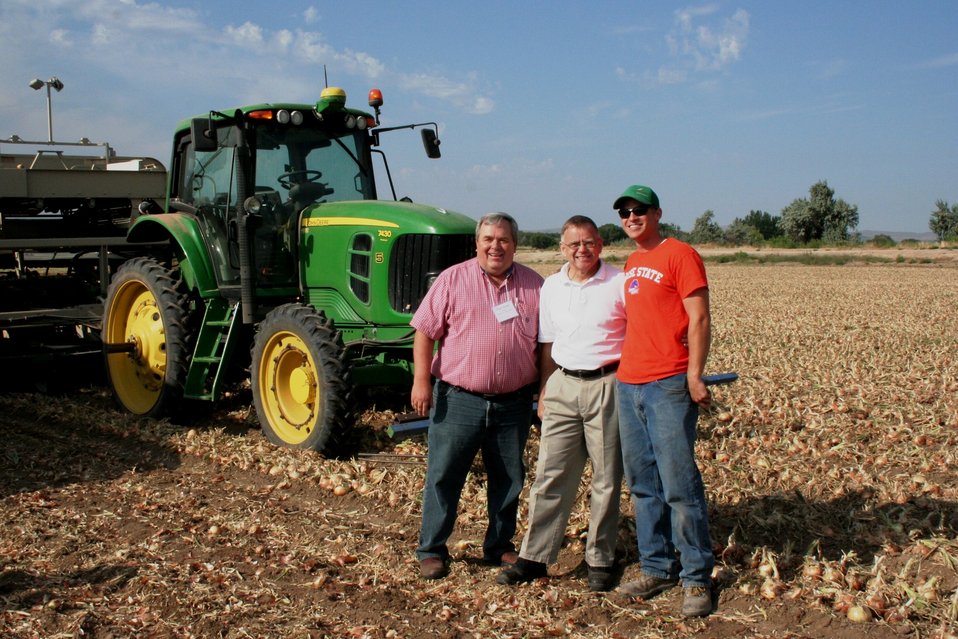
On the Road with Mike Taylor

FDA Deputy Commissioner Michael Taylor (center) tours an onion field with farmer Paul Skeen (left), president of the Malheur County Onion Growers in Oregon. Mike and colleagues started a five-day tour of the Pacific Northwest on Sunday, Aug. 11, 2013 -- visiting Idaho, Oregon and Washington -- to get a first-hand look at produce production and irrigation operations, and to discuss the proposed Produce Safety Rule with growers, food industry representatives and state officials. For more about Mike's multi-region tour, read these FDA Voice blog posts:

• Hearing the Concerns of Maine Growers Striving for Agricultural Diversity
• On the Road with Mike Taylor: Touring the Pacific Northwest
• On the Road with Mike Taylor, Day 2: Frank Talk in Farm Country
• On the Road with Mike Taylor, Day 3: Families and Partnerships
• On the Road with Mike Taylor, Day 4: Looking to the Future